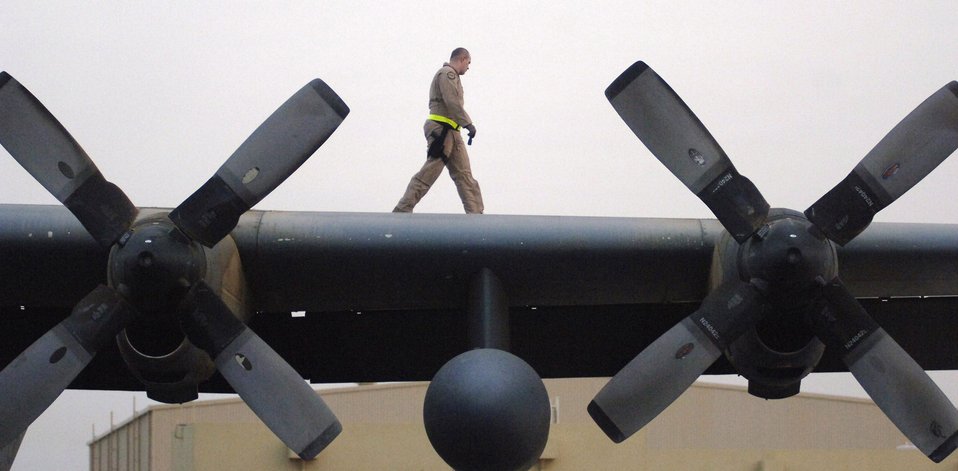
Leaflet airdrop mission delivers clear message to Taliban

Staff Sgt. Jeremy Fraser a C-130 Hercules flight chief engineer, performs a preflight check March 6 in preparation for a warning leaflet airdrop over the Afghanistan. The leaflet airdrop mission is contributing to Operation Achilles, launched by International Security Assistance Force, to create an environment that will enable the government of Afghanistan to help improve security and the Afghan people's quality of life.